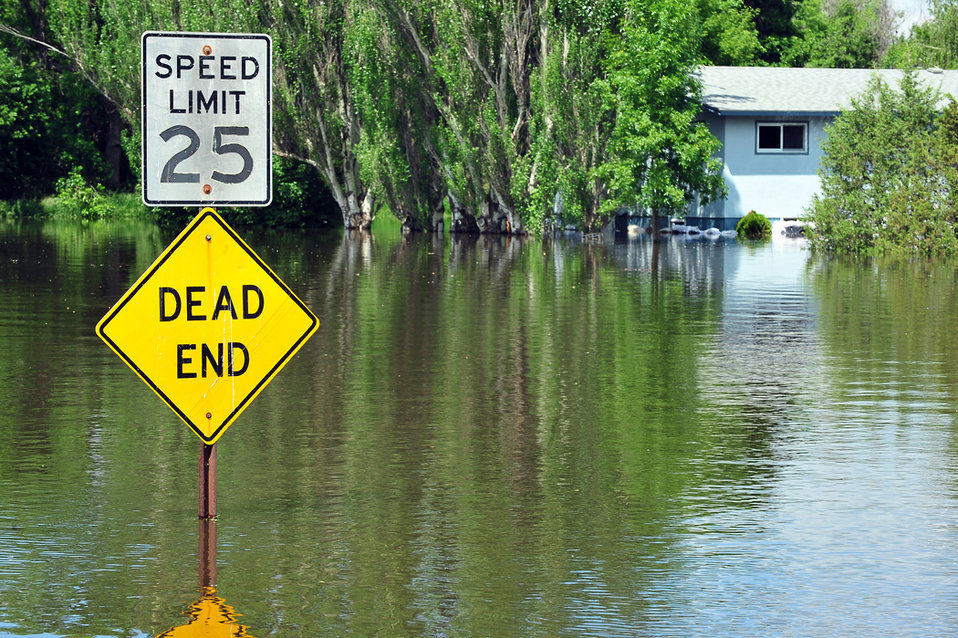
Minot Airmen fight flood

The Souris River flows down a public street outside of Minot Air Force Base, N.D., June 22, 20111. The river breached levees there forcing more than 11,000 residents to evacuate. The flood also is affecting nearly 1,000 Airmen from nearby Minot Air Force Base.